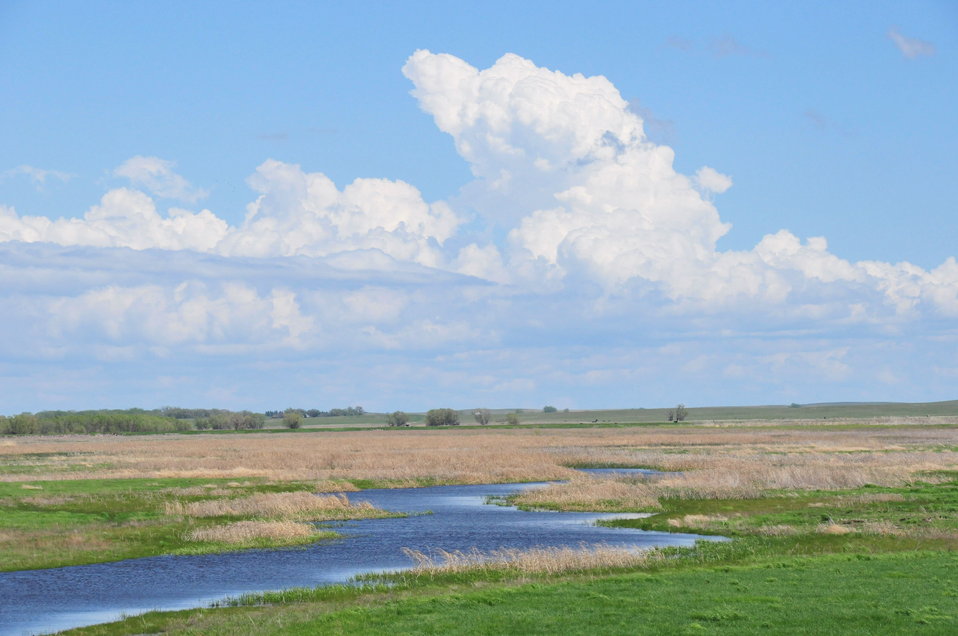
Pool 8 in daylight, Sand Lake National Wildlife Refuge

Sand Lake NWR in South Dakota. Models biologists to better manage habitat today, with the goal of conserving it for tomorrow given the onset of climate change.